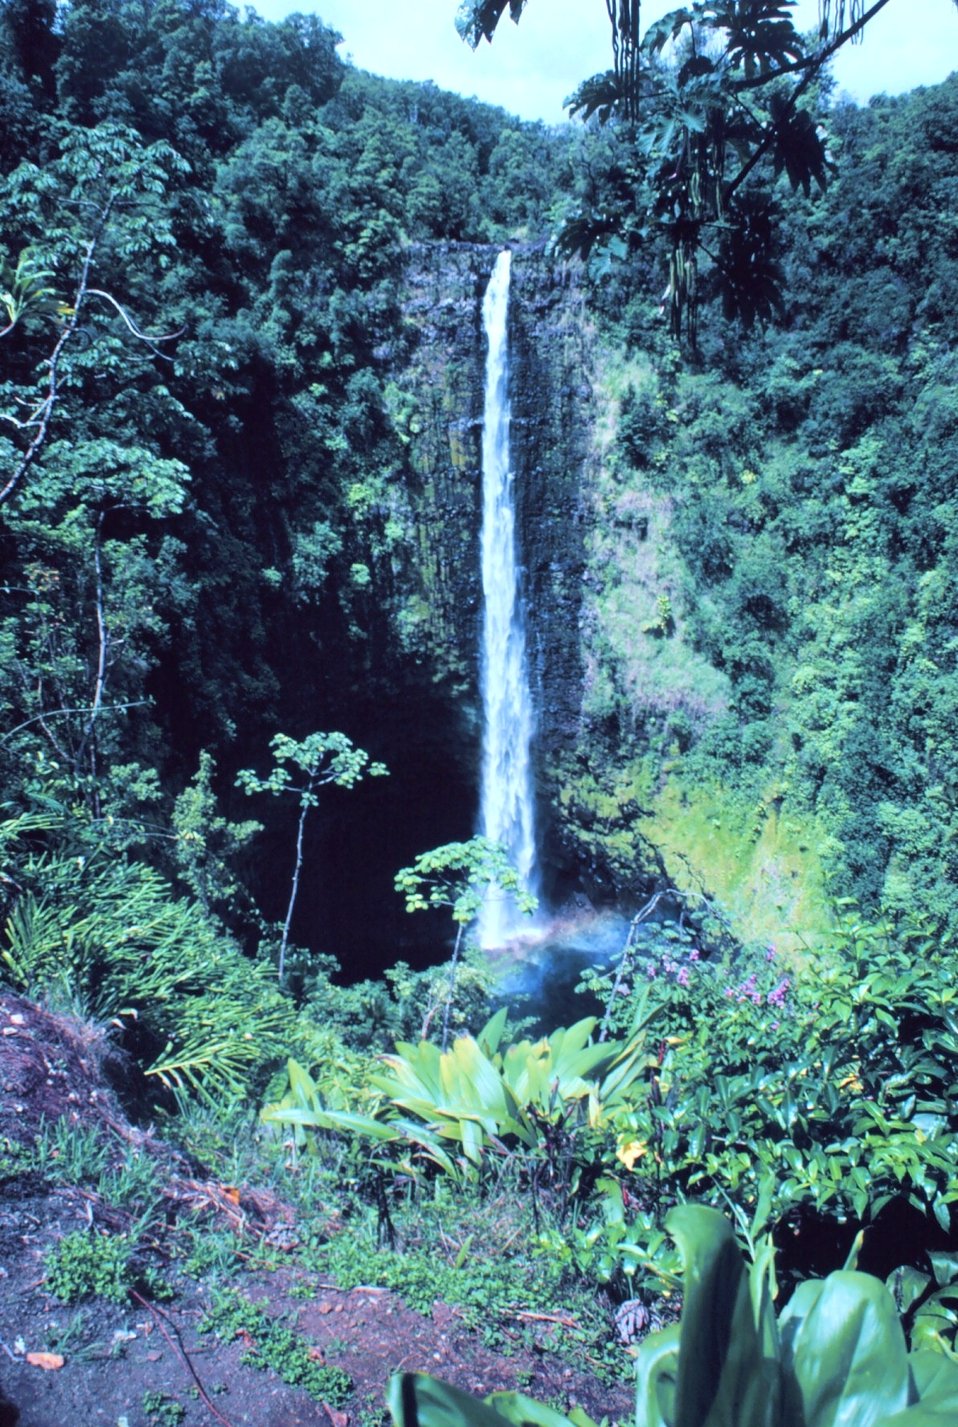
Akaka Falls